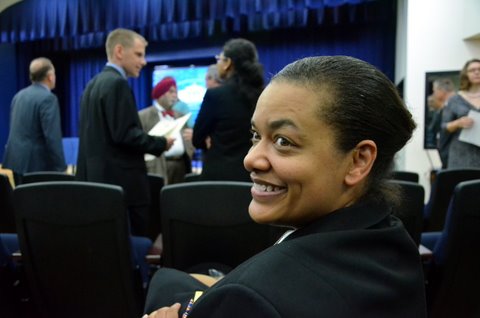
WH 2012 World Hepatitis Day Event